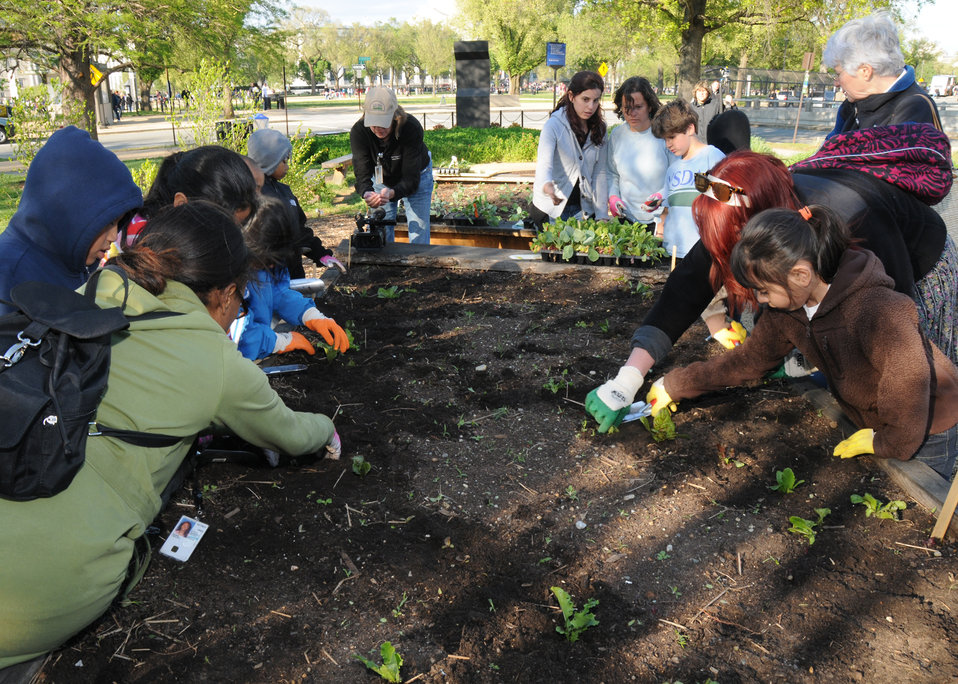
Young people from the non-profit Jubilee Housing organization’s after school youth services program help U.S. Department of Agriculture (USDA) employee’s plant vegetables and herbs in the People’s Garden on Friday, Apr. 9, 2010. The Jubilee Youth Services offers a safe place for learning and fellowship for young people through a supervised after-school program. Participating in the planting (back row standing to the right) are Annie Ceccarini, Education Outreach Specialist for the People’s Garden, Livia Marques, Director of the People’s Garden, Carol Martin,Program Coordinator, Early Start Program, Jubilee Youth Services, and Liz Gossens, Program Associate, Jubilee Youth Services. USDA photo 10di1300-191